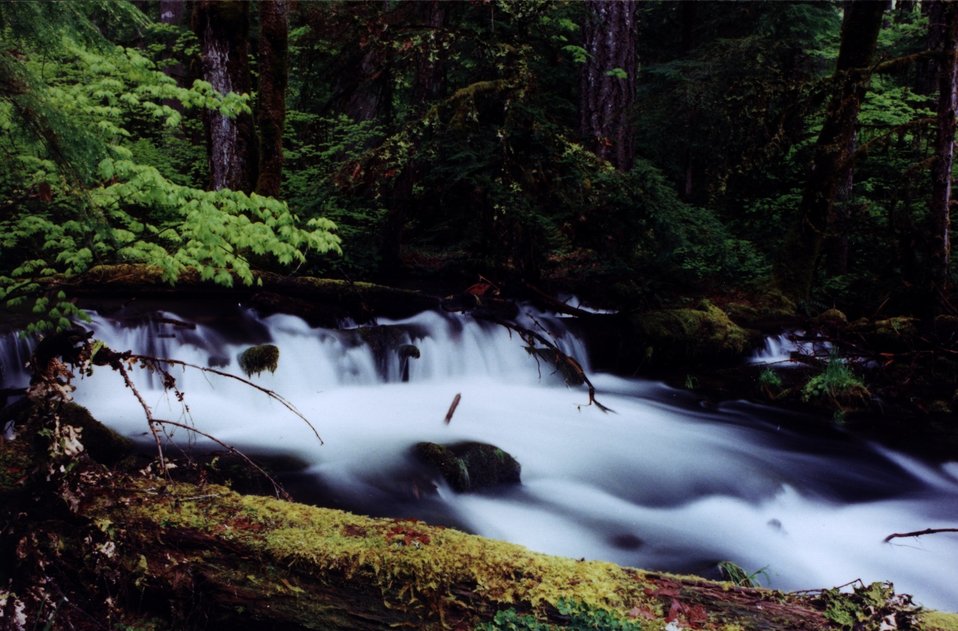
Creek off from Watson Falls.